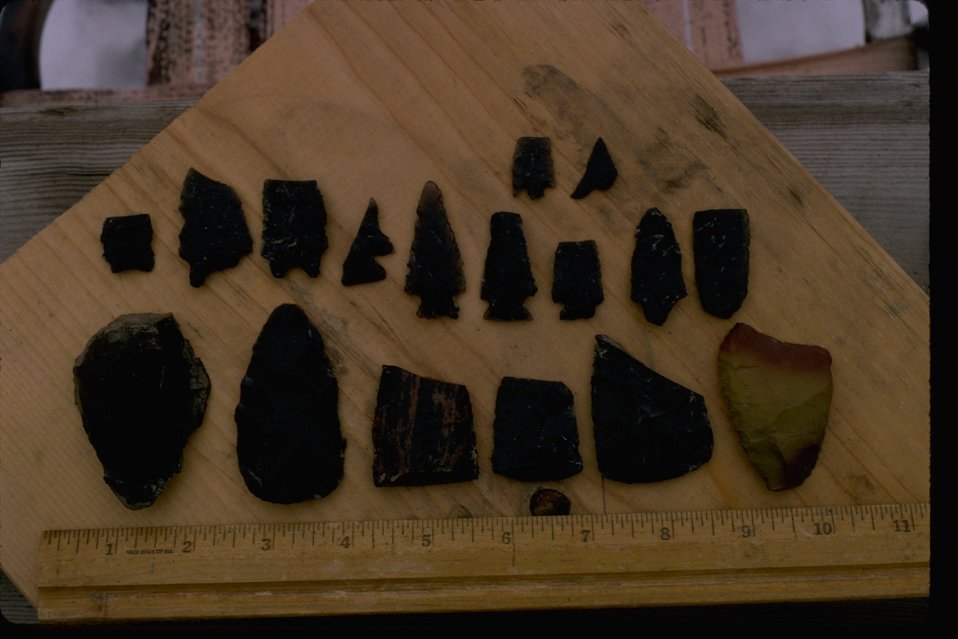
A display of Arrow Heads from the Glass Buttes area.